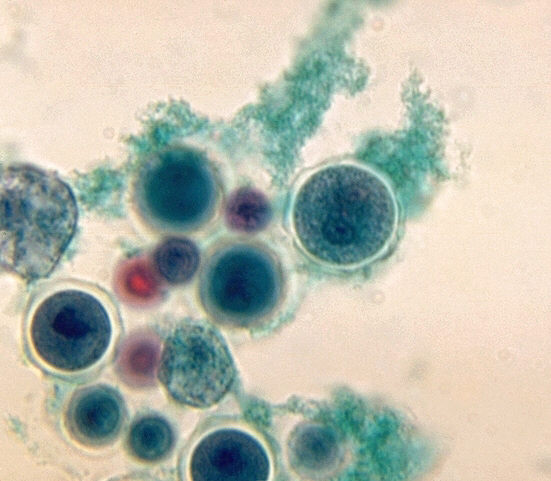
Hartmannella vermiformis. Trichrome stain.